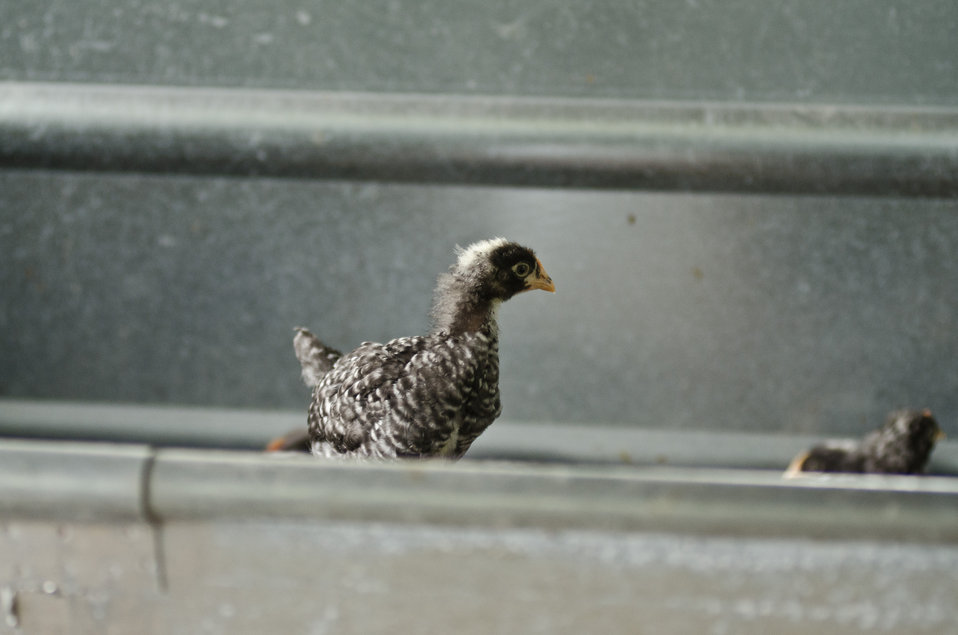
Chicks at Nick’s Organic Farm, in Adamstown, MD, on Friday, July 12, 2013. The farm, owned by Nick Maravell, produces Black Angus beef, chicken, turkey, eggs, hay, soybeans, corn, alfalfa, orchard grass, rye; and other crops. The cattle are100% grass-fed receiving certified organic pasture, certified organic hay (in winter), water and mineral salts mixed with sea kelp. The cattle are not fed hormones, antibiotics or animal products. Poultry feed from grain is ground from organic grain. The poultry also graze on organic pastures. The farm has conducted on-farm research with federal, state and non-profit agencies to refine organic practices.